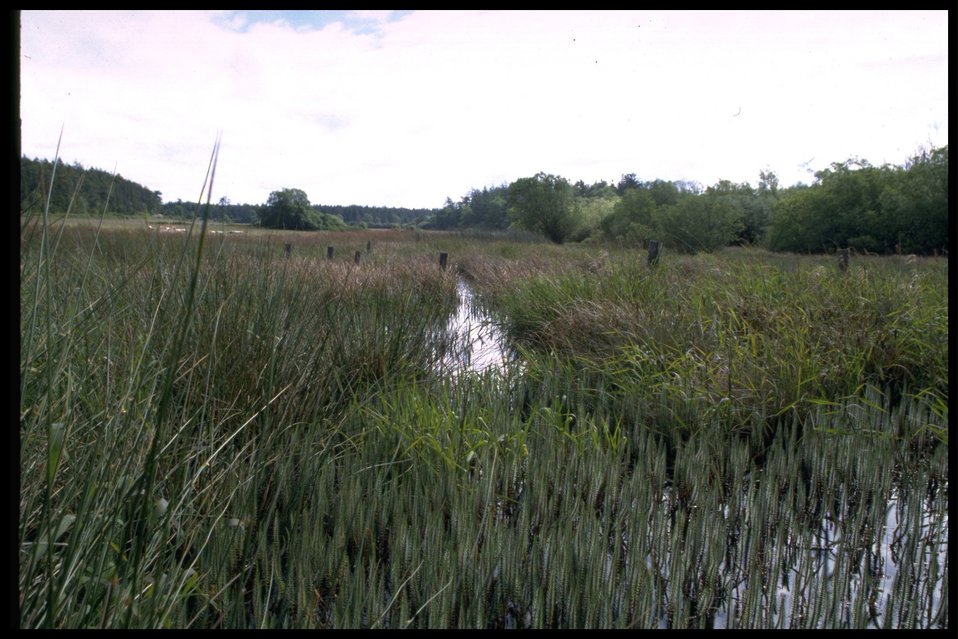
Chadwick Hill Marsh.